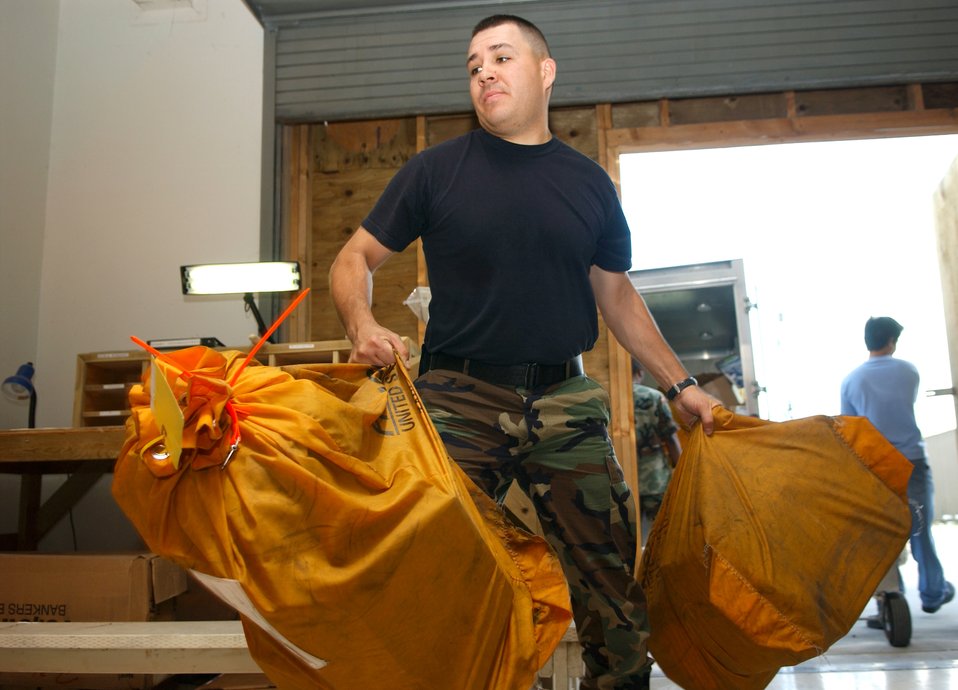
Letters from home

Staff Sgt. Jayson Azua unloads incoming mail at a deployed location in Southwest Asia. Sergeant Azua is the 40th Air Expeditionary Group postmaster.